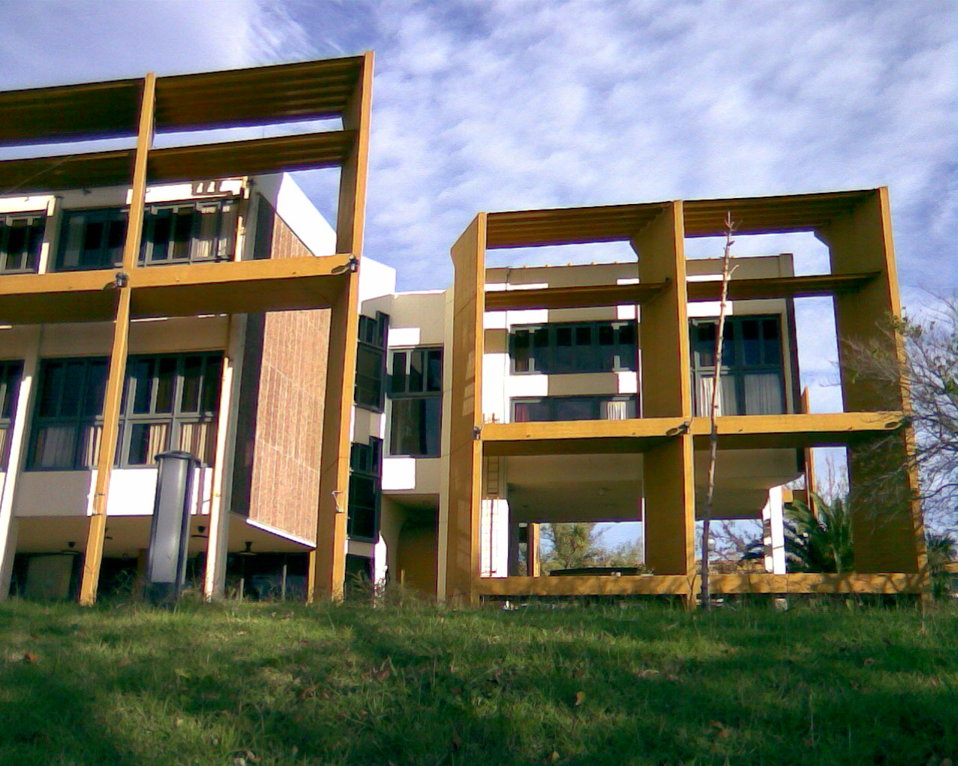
Español: Edificio de la Cámara de diputados de La Pampa, parasoles.